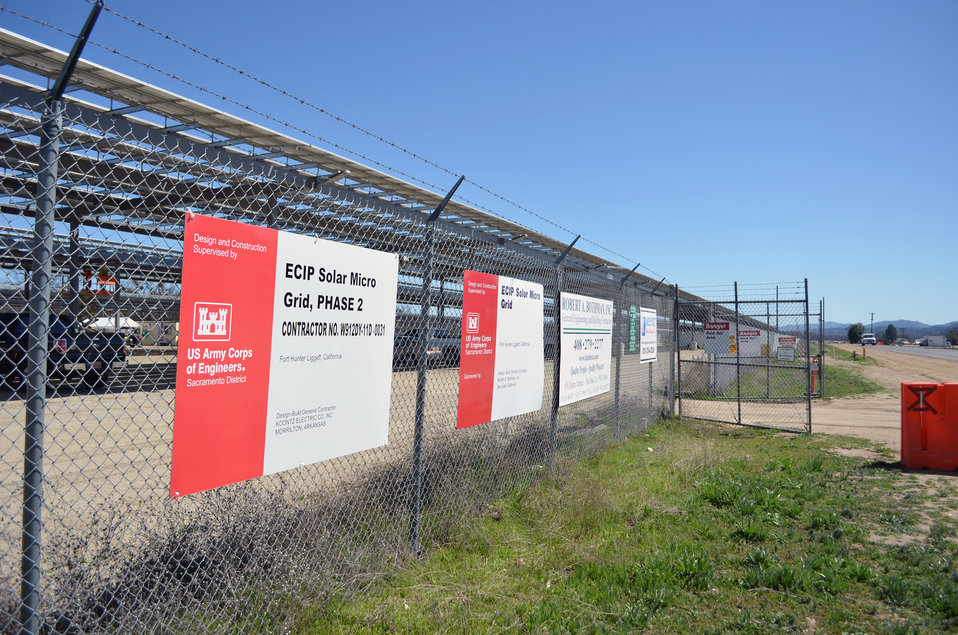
Solar project at Fort Hunter Liggett - March 2013

A fence surrounds the construction site for phase 1 and 2 of a solar microgrid project at Fort Hunter Liggett, Calif., March 12, 2013. The U.S. Army Corps of Engineers Sacramento District managed construction of the project, awarding contracts of $8.4 million for phase I and $9.7 million for phase 2. Phase 1 was completed in April 2012 and generates one megawatt of power, enough energy to power 250 to 300 homes. Phase 2, scheduled for completion in May 2013, will generate an additional one megawatt of power and is expected to be the second of four at the post. Along with the energy production, the panel arrays form a canopy that will shade the majority of the post’s vehicles. Fort Hunter Liggett is one of six pilot installations selected by the U.S. Army to be net zero energy, meaning the installation will create as much energy as it uses.